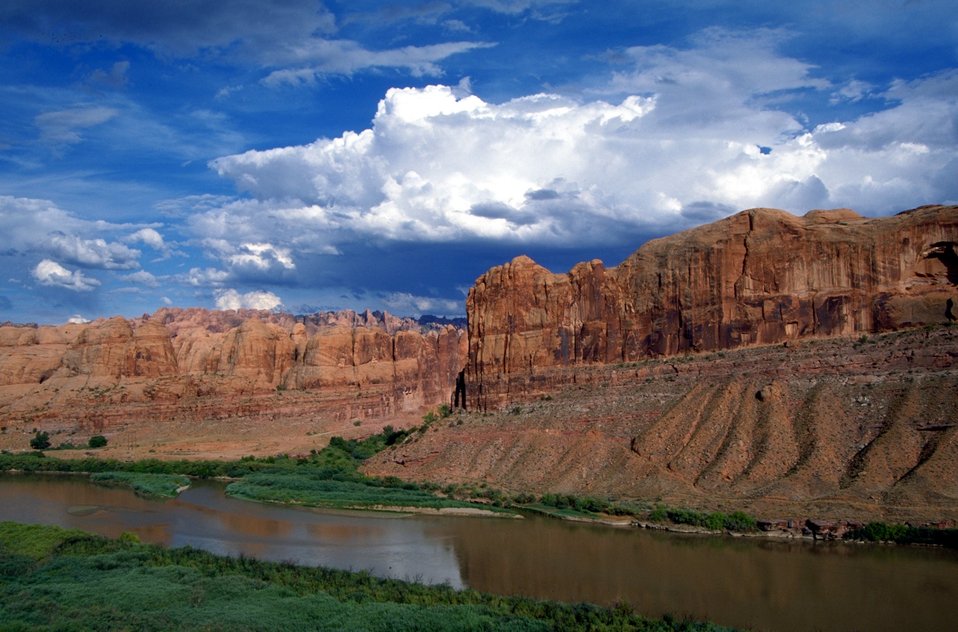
Colorado River and Slickrock near Moab, Utah.